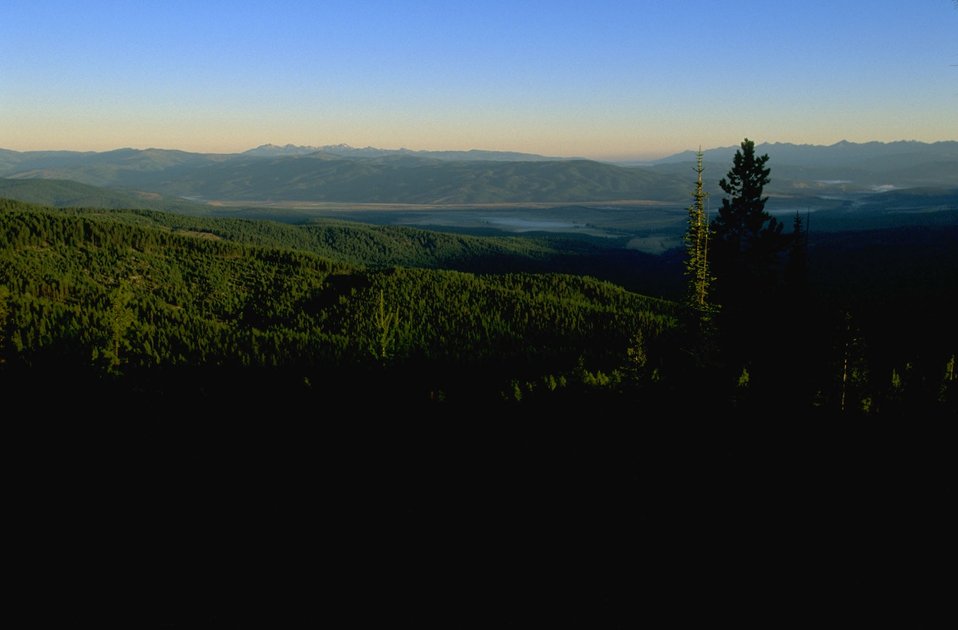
Garnet Mountains with the Blackfoot River Valley in foreground